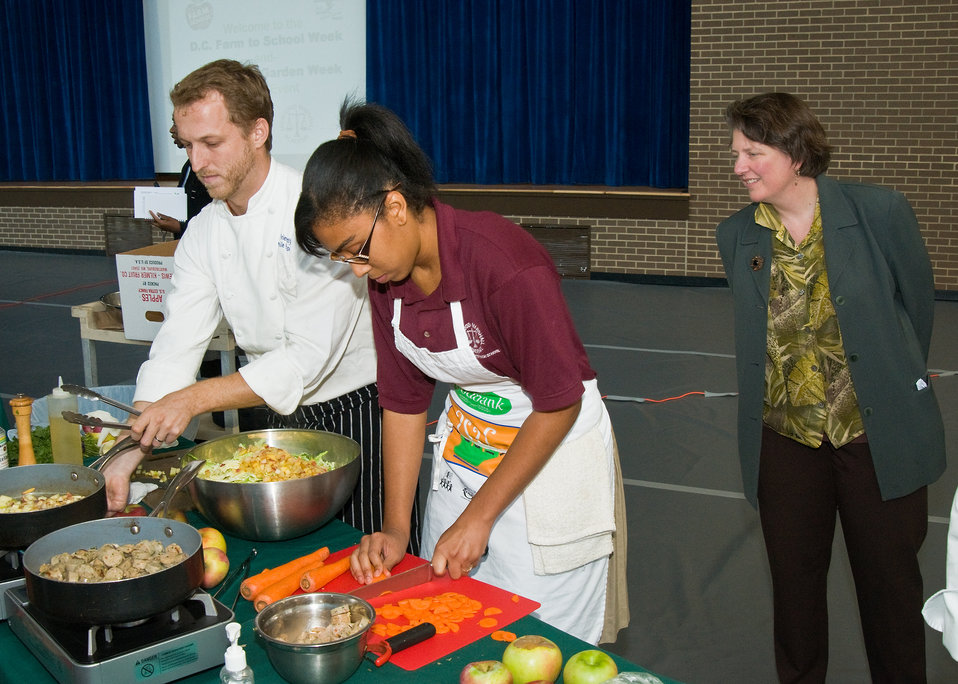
From left: Chef Oliver Friendly,'Eat and Smile Foods Catering,' Akasha-Regine Rodgers, a senior at Thurgood Marshall Academy and Deputy Secretary Dr. Kathleen Merrigan during the Chef Competition at the Savoy Elementary and Thurgood Marshall Academy shared campus in Washington, DC, Tuesday, October 12, 2010. Chef Oliver and Akasha-Regine are preparing, 'Spicy Apple Slaw with Chicken Sausage' for the Chef Competition off the D.C. Farm to School and D.C. School Garden Week. Deputy Secretary Merrigan gave the keynote address at the event where local chef’s created healthy, delicious recipes using local apple varieties to be judged by the students themselves. School children and a partnership of community organizations have responded to First Lady Michelle Obama’s goal to end childhood obesity by building school gardens, providing healthier foods in school meals, and helping kids connect with local food and agriculture. USDA Photo 10di1522-51 by Bob Nichols.